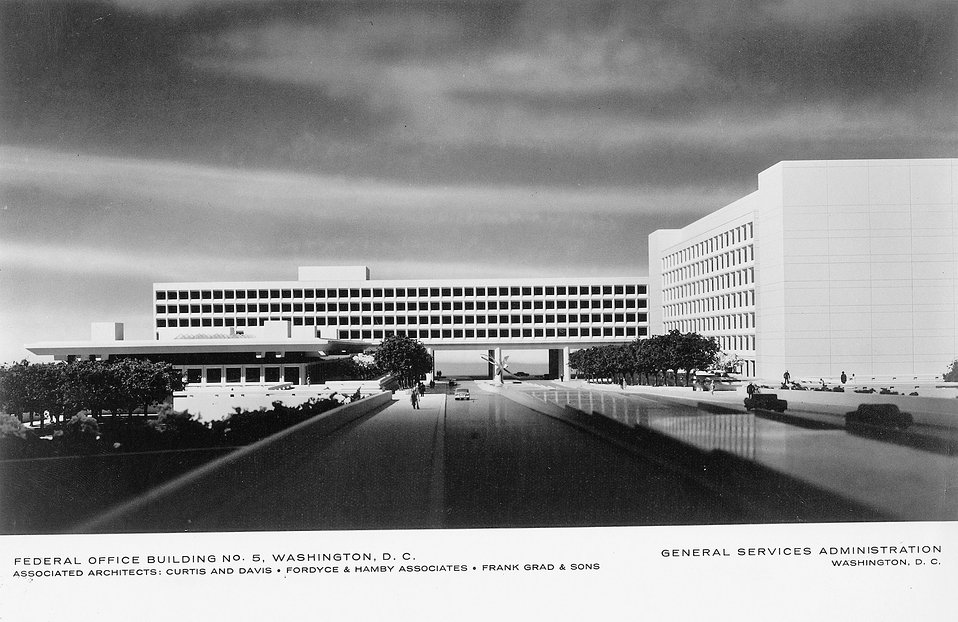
Federal Office building No. 5 Washington DC